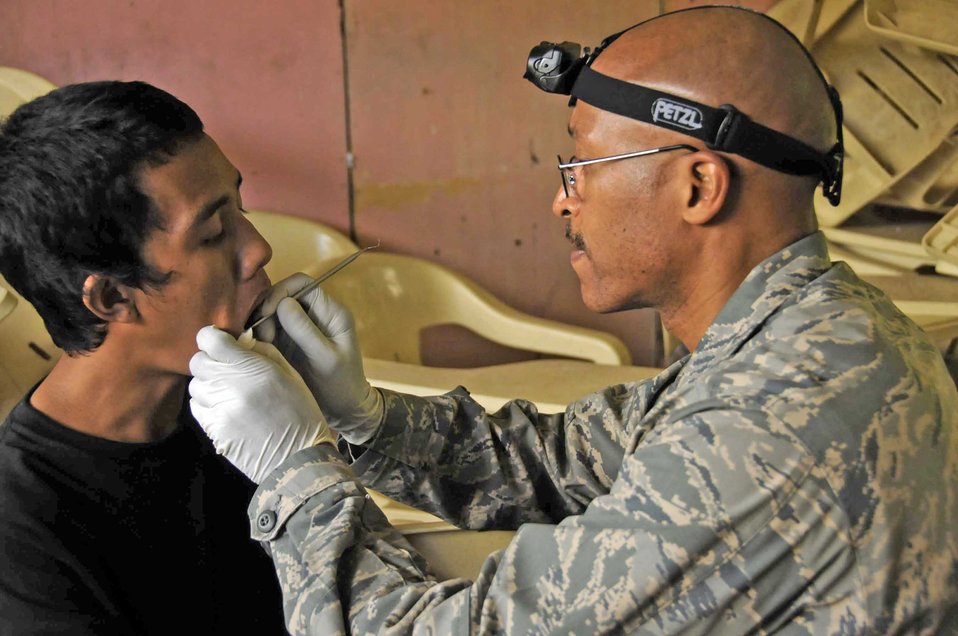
American servicemembers help restore shrine, provide medical care in Philippines

Lt. Col. Arnold Stocker examines the mouth of a young boy during a Medical Civic Action Project Nov. 28, 2009, in Jolo, Philippines. Colonel Stocker is a nurse anesthetist assigned to Joint Special Operations Task Force-Philippines.